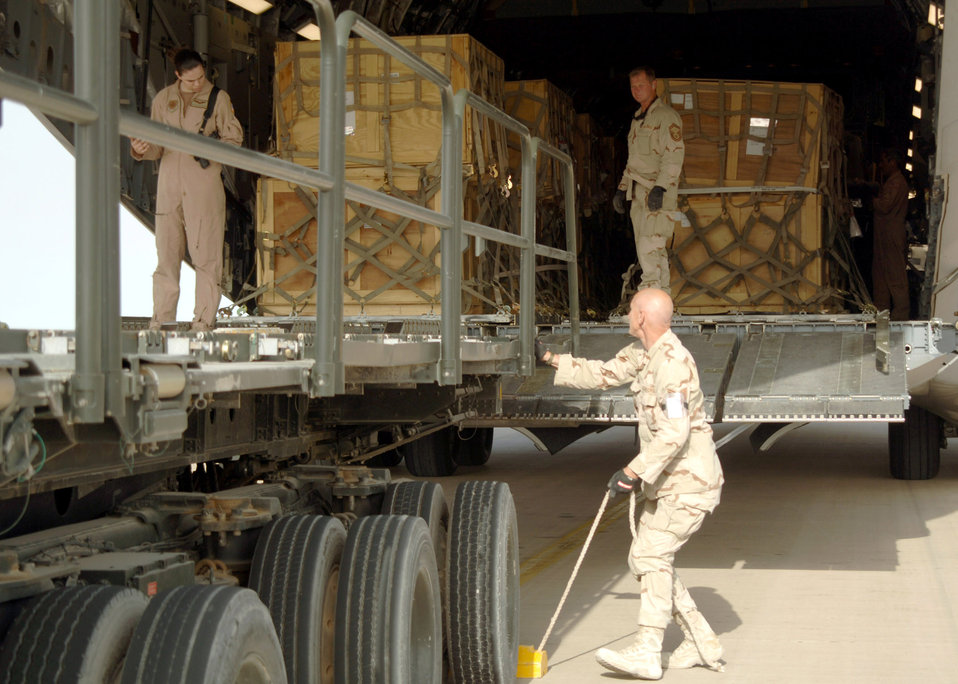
Aerial porters saving countless lives moving air cargo in Iraq

Airmen offload a C-17 Globemaster III from Charleston Air Force Base, S.C., April 21 at at Al Asad Air Base, Iraq. Since January, Airmen assigned to the 438th Aerial Port Flight have processed more than 32,000 passengers, 15,528 tons of cargo and more than 2,600 aircraft, keeping nearly 12,000 American servicemembers off the roads in convoys.